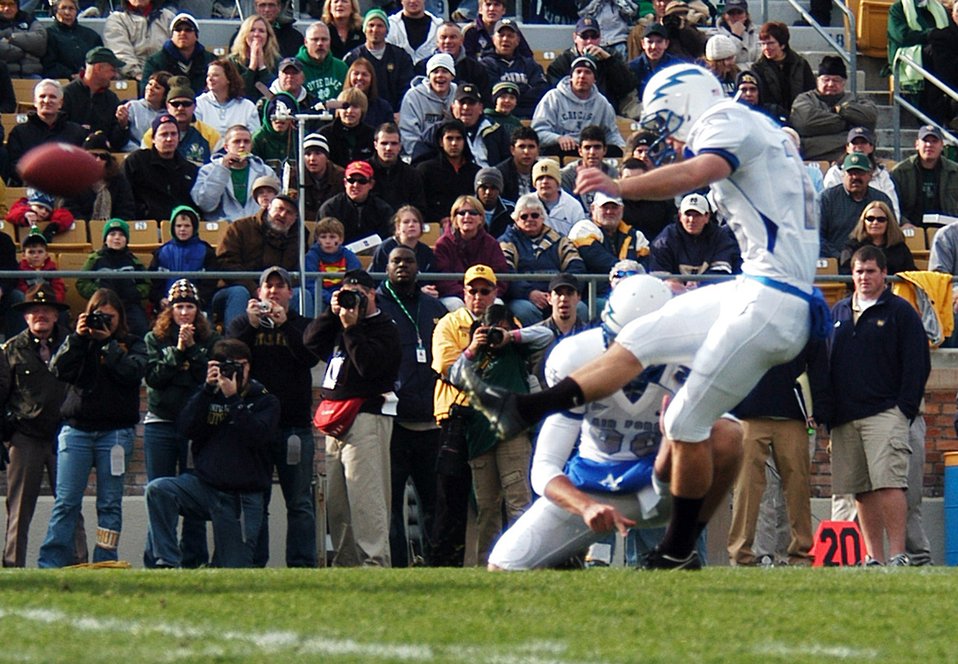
Academy accepts bid to Armed Forces Bowl

U.S. Air Force Academy kicker Ryan Harrison kicks a field goal during Air Force's 41-24 victory over Notre Dame Nov. 10 at South Bend, Ind. U.S. Air Force Academy officials have accepted a bid to play in the Bell Helicopter Armed Forces Bowl on New Year's Eve at Fort Worth, Texas.